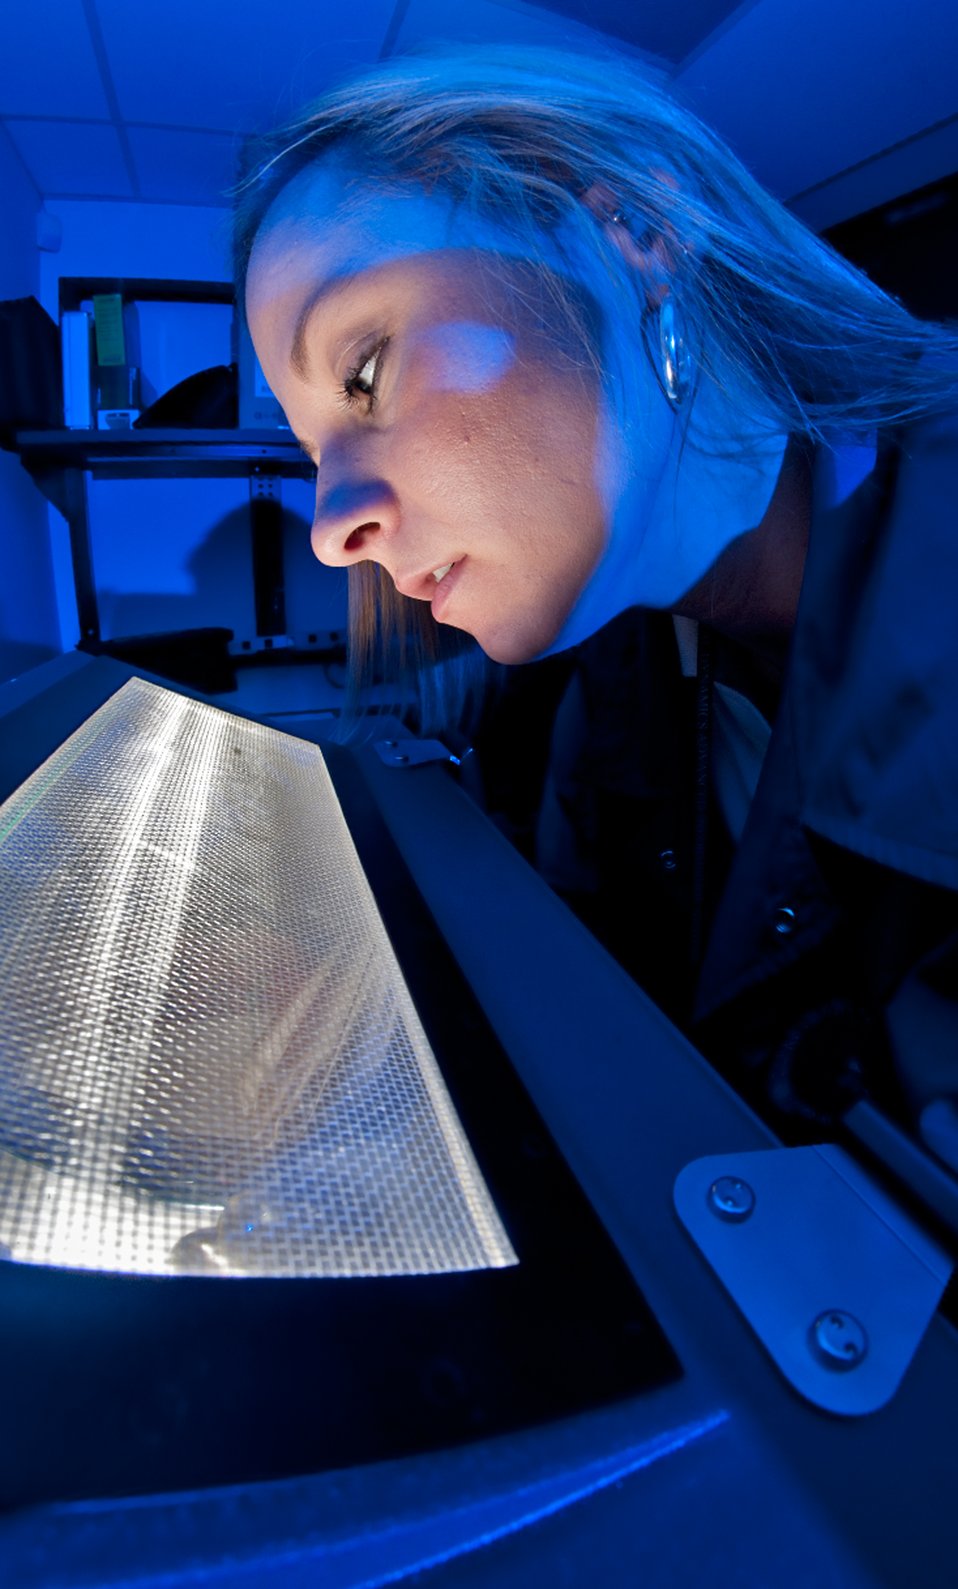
A close look at DoD Cyber Crime Center

Courtney Lancaster, positions a cellular flip phone in a Faraday box at the Defense Computer Forensic Laboratory on Sep. 9, 2010, in Linthicum, Md. Ms. Lancaster, a computer forensic technician, uses the signal blocking box to charge and extract data information from memory cards or chips inside it, without fear of the phone sending or receiving data or commands that might alter or erase possible evidence.